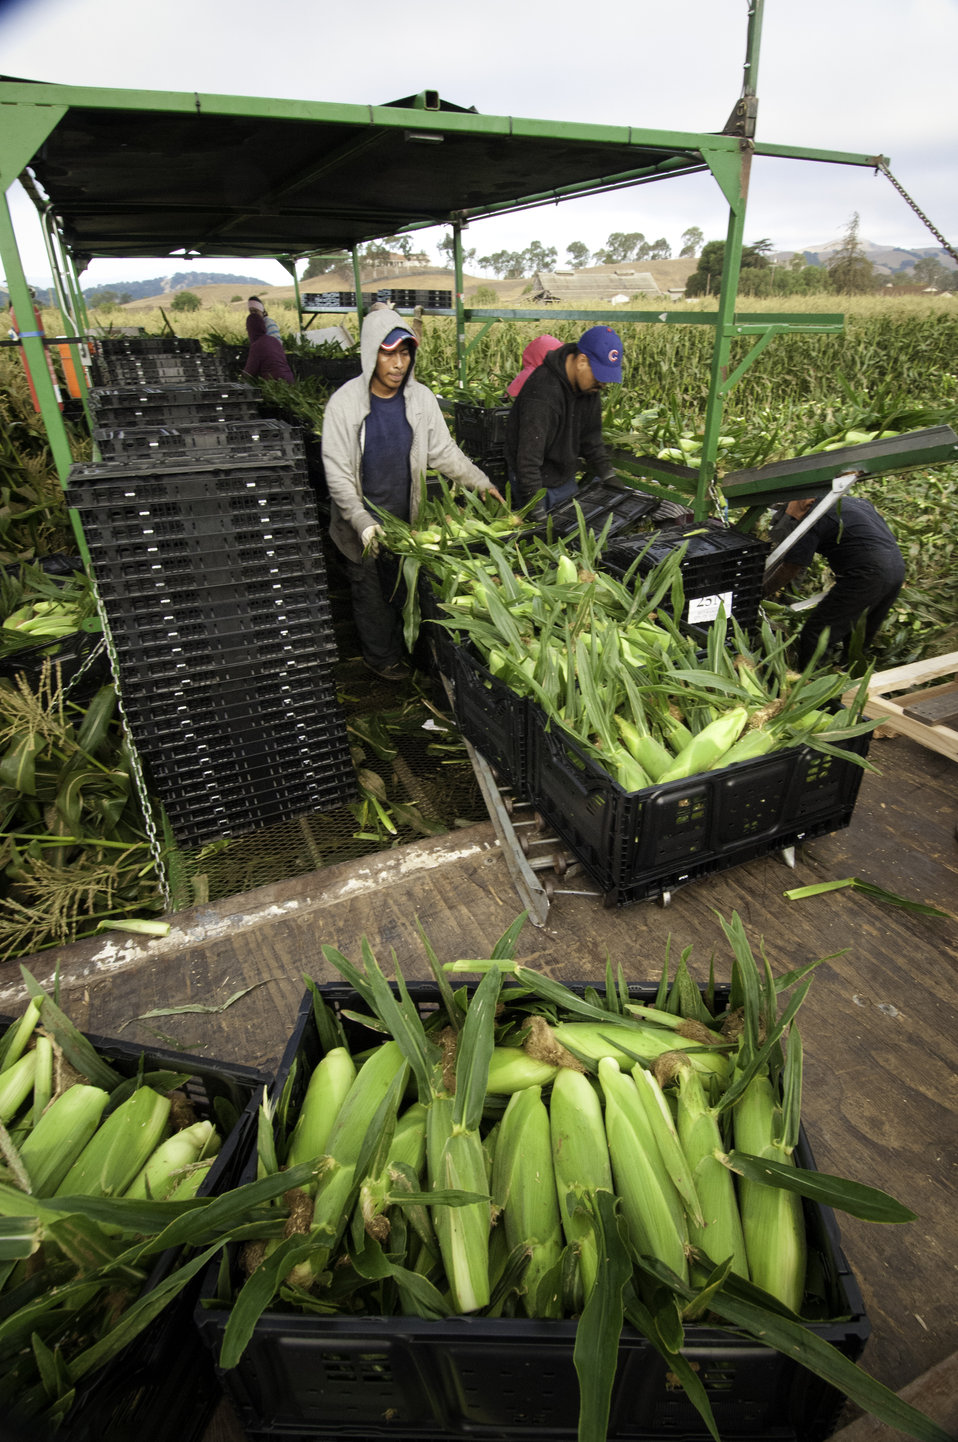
Migrant workers harvest corn on Uesugi Farms in Gilroy, CA on Wednesday, Aug. 28, 2013.